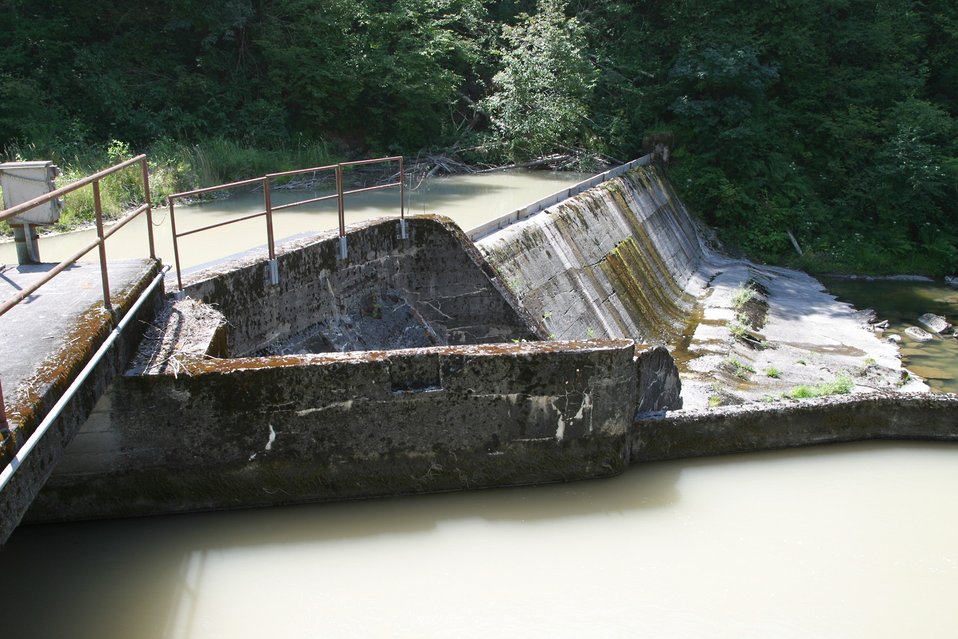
Little Sandy Dam is scheduled to be removed in 2006.